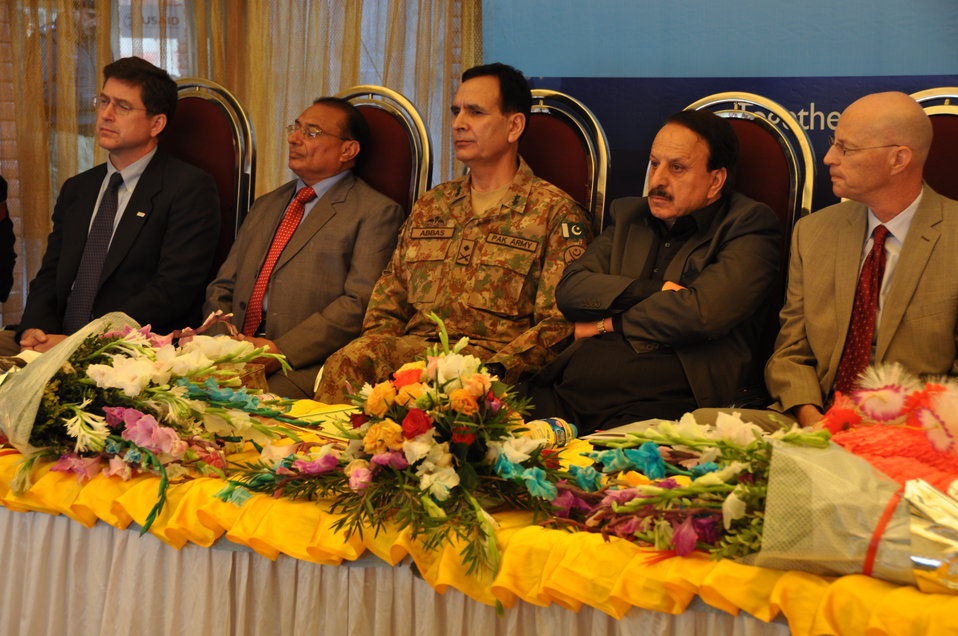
Dhirkot Reconstructed Hospital Inauguration Pakistan Reconstruction Program 18